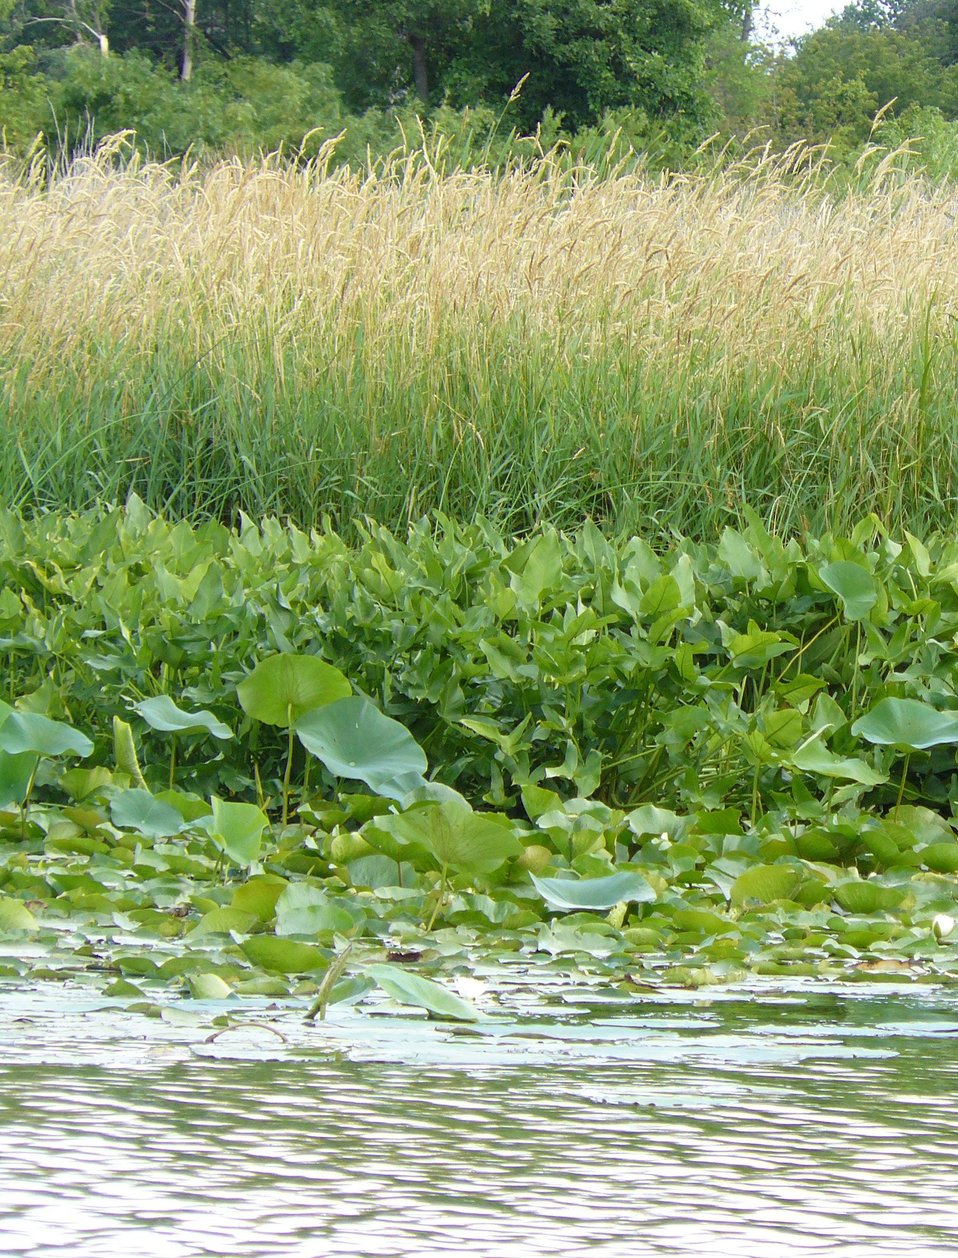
Wetland plants